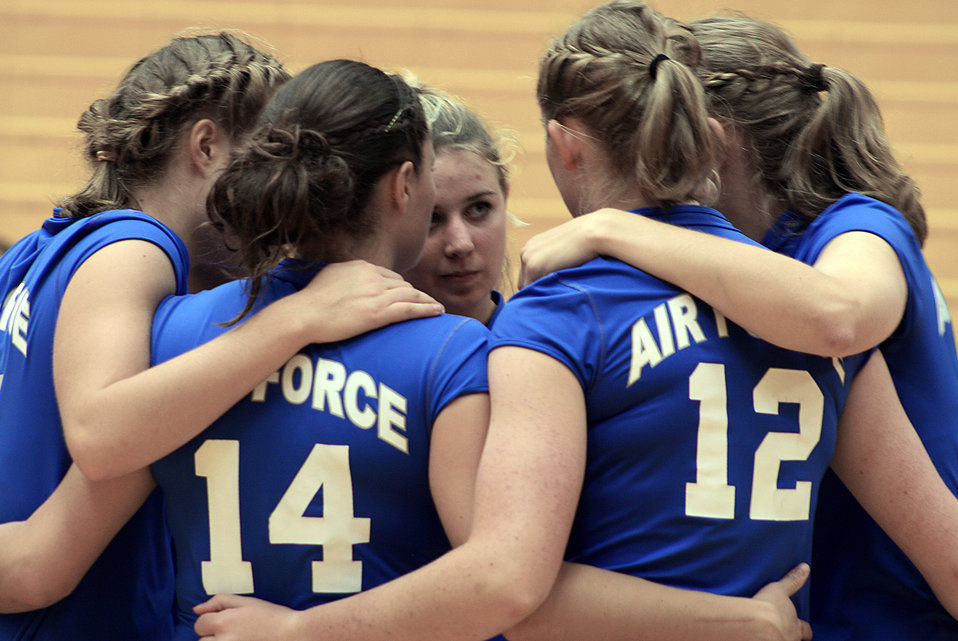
Left side is weak, hit there

U.S. Air Force Academy women's volleyball team members huddle during a match at a tournament in Denver recently. The Air Force's 5-3 season start is the team's best opening series since 2003.